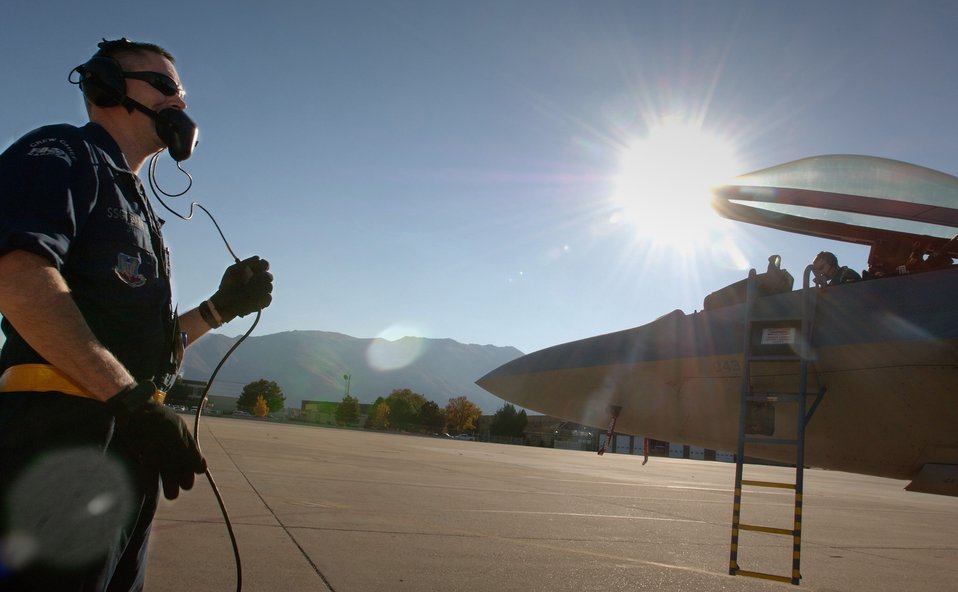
Combat Hammer

HILL AIR FORCE BASE, Utah -- Staff Sgts. John Barr (left) and James Gainville (cockpit), do a preflight inspection on an F/A-22 Raptor here. The 27th Fighter Squadron dedicated crew chiefs, from Langley Air Force Base, Va., did the check Oct. 16. The unit deployed here to put the first operational F/A-22 Raptor squadron through the paces in a deployment environment, including live bomb training.